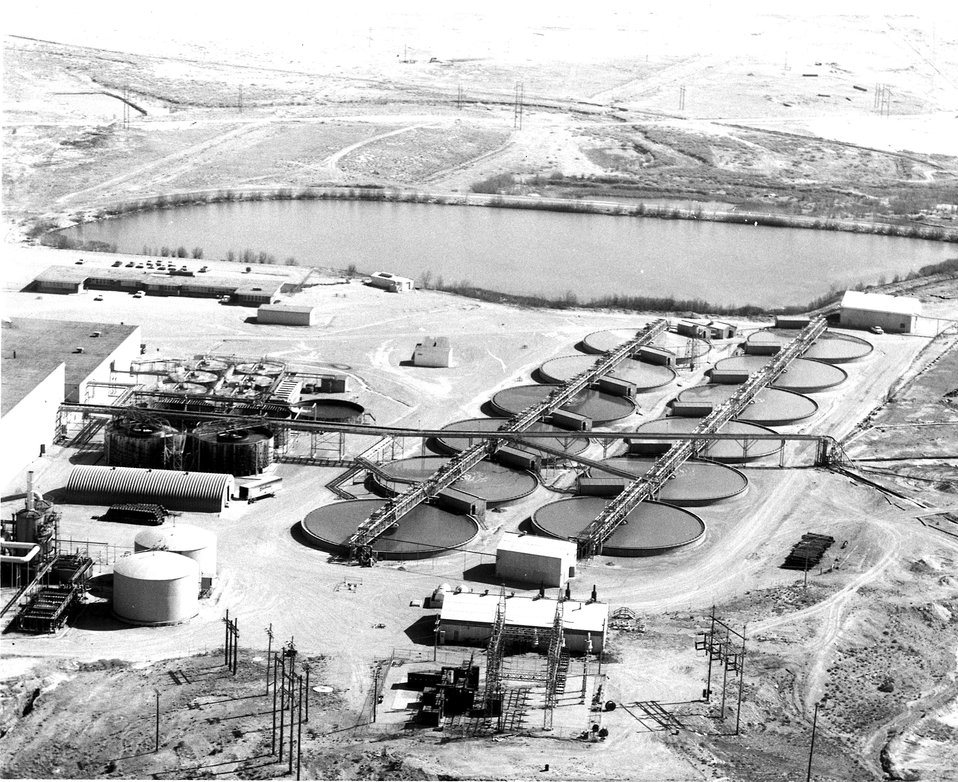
Thickener section of a uranium mill, Grants, New Mexico. Discharge from the leaching circuit goes to counter current decantation Washington 12 thickener tanks. c. 1968